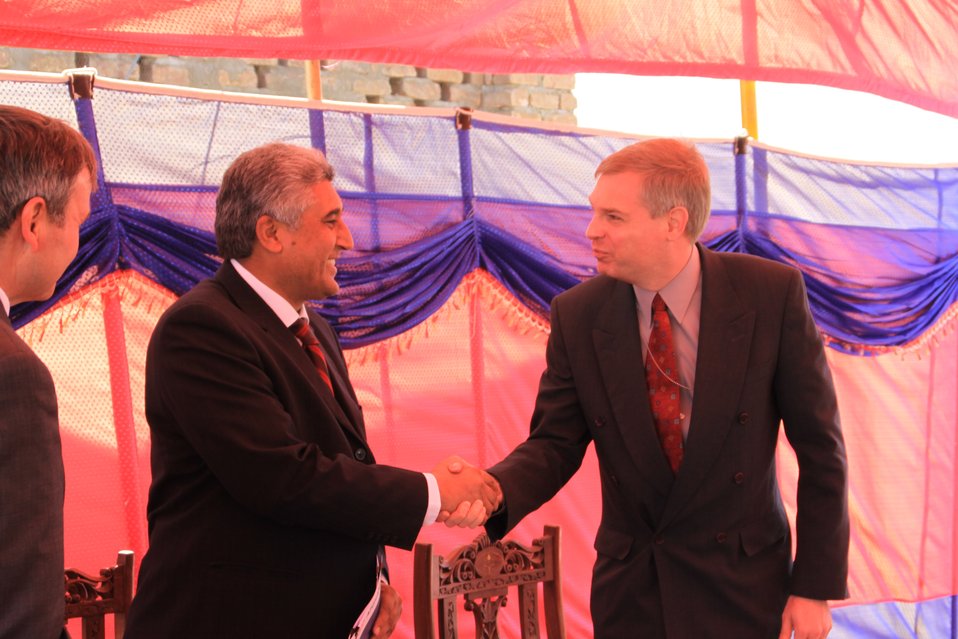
AVIPA Plus Wheat Seed Distribution 101005

US Ambassador Karl Eikenberry and USAID Acting Mission Director Kevin Brownawell joined the Minister of Agriculture, Irrigation and Livestock, H.E. Minister Mohammed Rahimi in signing a Memorandum of Understanding and distributing vouchers to area farmers for wheat and fertilizer.